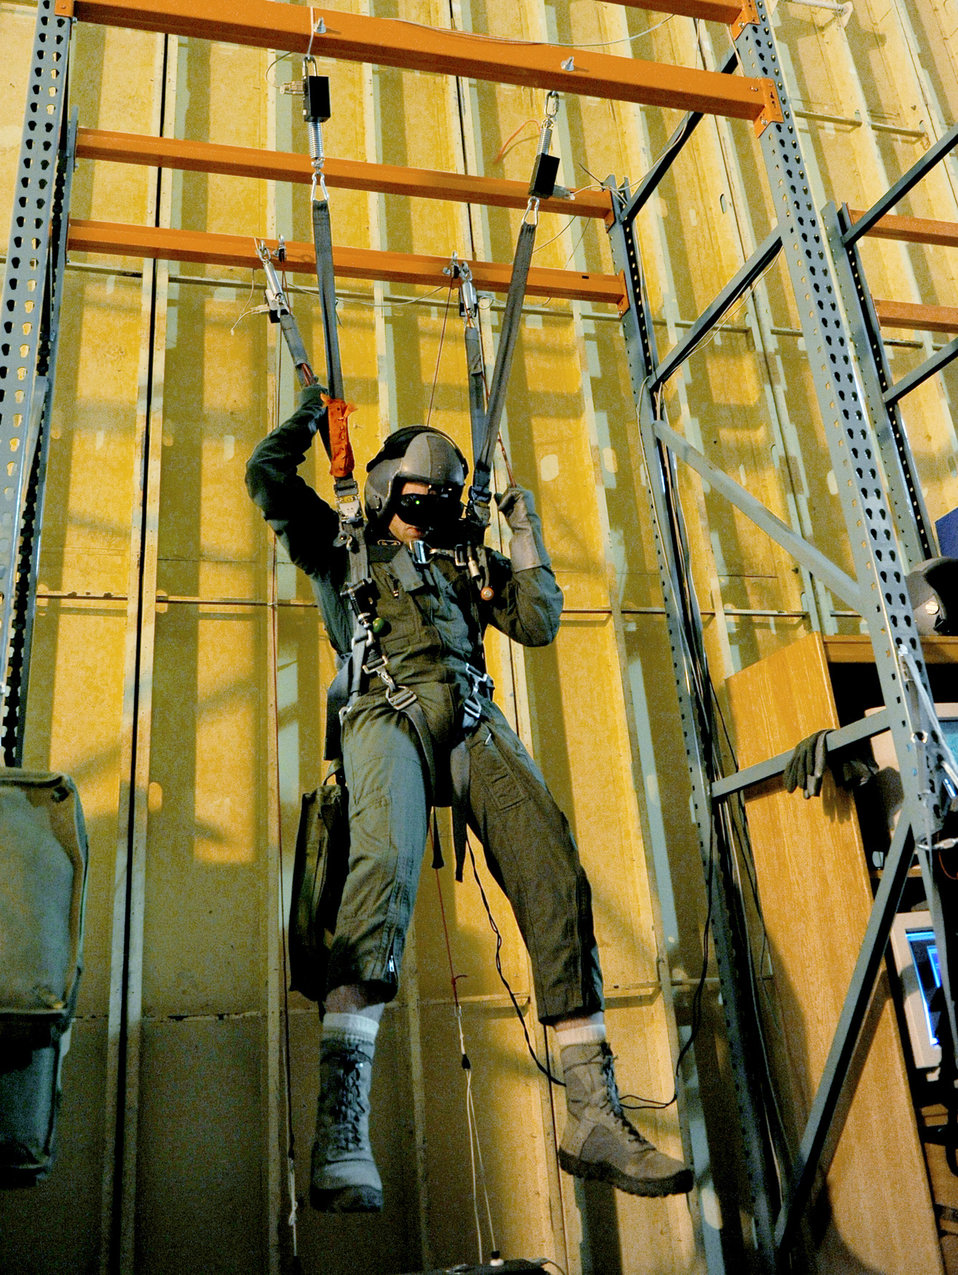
Just hanging around

Staff Sgt. Matt Searby from the 2nd Operation Support Squadron practices a parachute 'landing' in the life support facility at Barksdale Air Force Base, La., Nov. 29, 2010. Sergeant Searby demonstrated to a class he teaches the proper way to land.